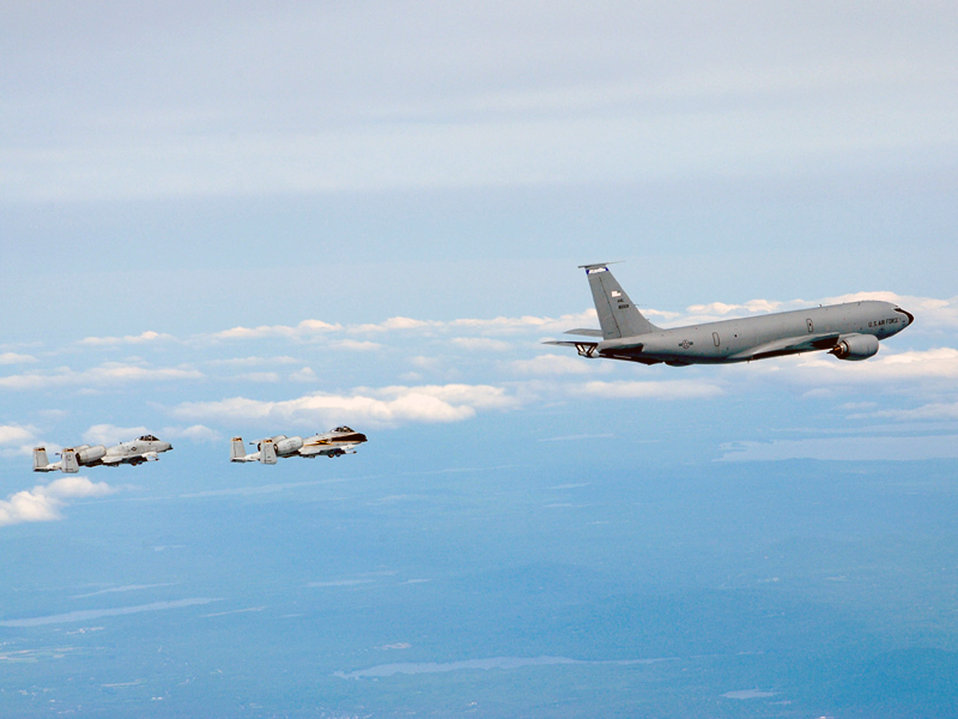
Air Force Week New England kicks off at Pease Air National Guard Base

Two A-10 Thunderbolt IIs from the Connecticut Air National Guard's 103rd Fighter Wing fly in formation behind a KC-135 Stratotanker from the New Hampshire Air National Guard's 157th Air Refueling Wing during a special event held June 6 to promote Air Force Week New England which will take place in August.